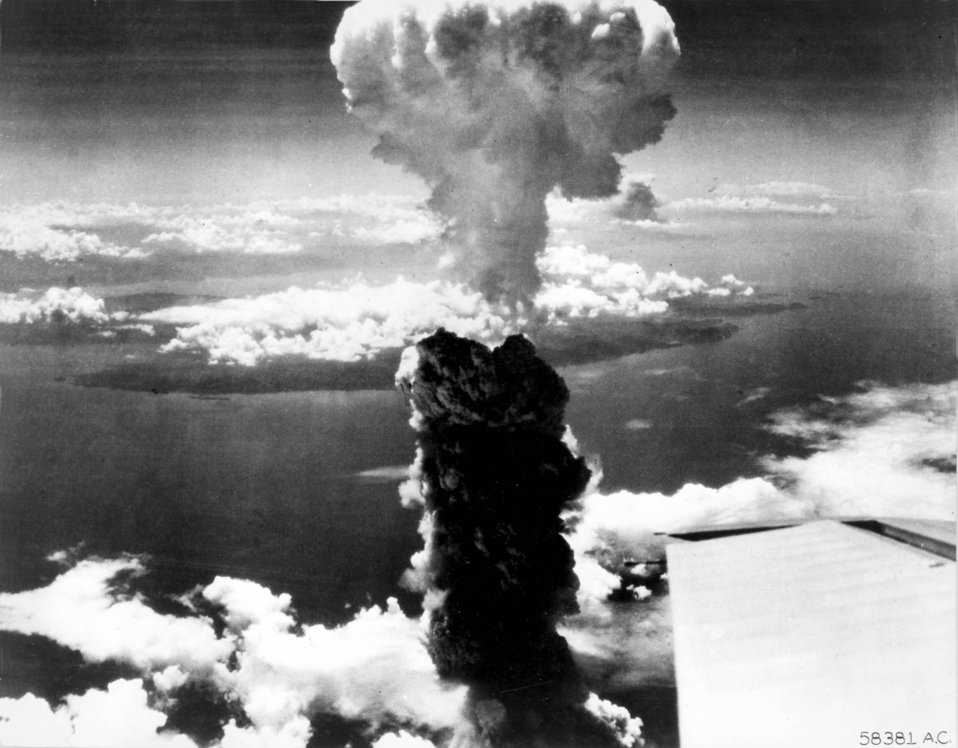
Nagasaki

1940's -- Smoke billows up over Nagasaki, Japan after bombing by atomic bomb on 9 August 1945. Two planes of the 509th Composite Group, part of the 313th Wing of the 20th Air Force, participated in this mission; one to carry the bomb, the other to act as escort.